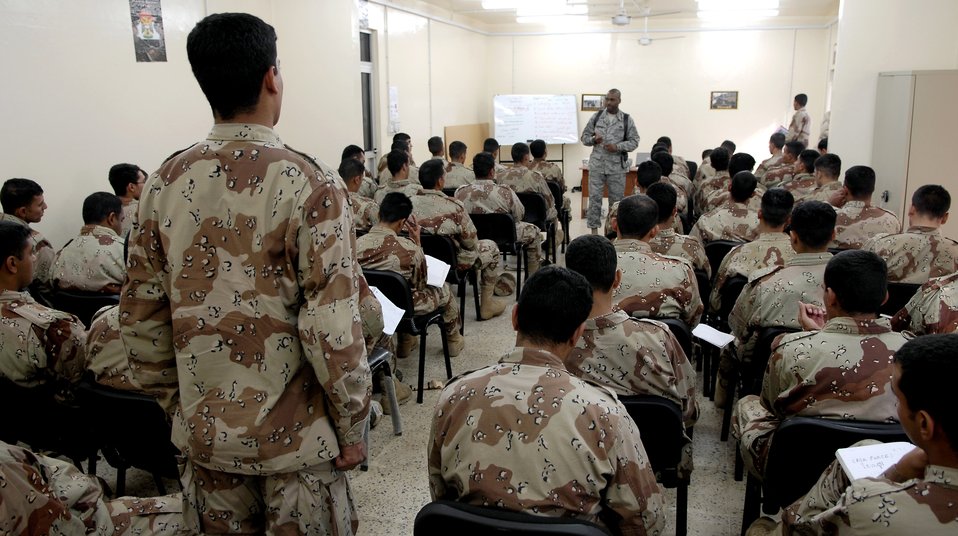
Basic training instructors help mold Iraq's future leaders

Tech. Sgt. Lamar Anderson teaches a class on core values to a group of Iraqi air force warrant officer trainees. Sergeant Anderson is a military training instructor from Lackland Air Force Base, Texas, and is assigned to the 370th Expeditionary Training Squadron, at Taji Air Base, Iraq. The Lackland AFB MTIs are helping to mold Iraq's future leaders.